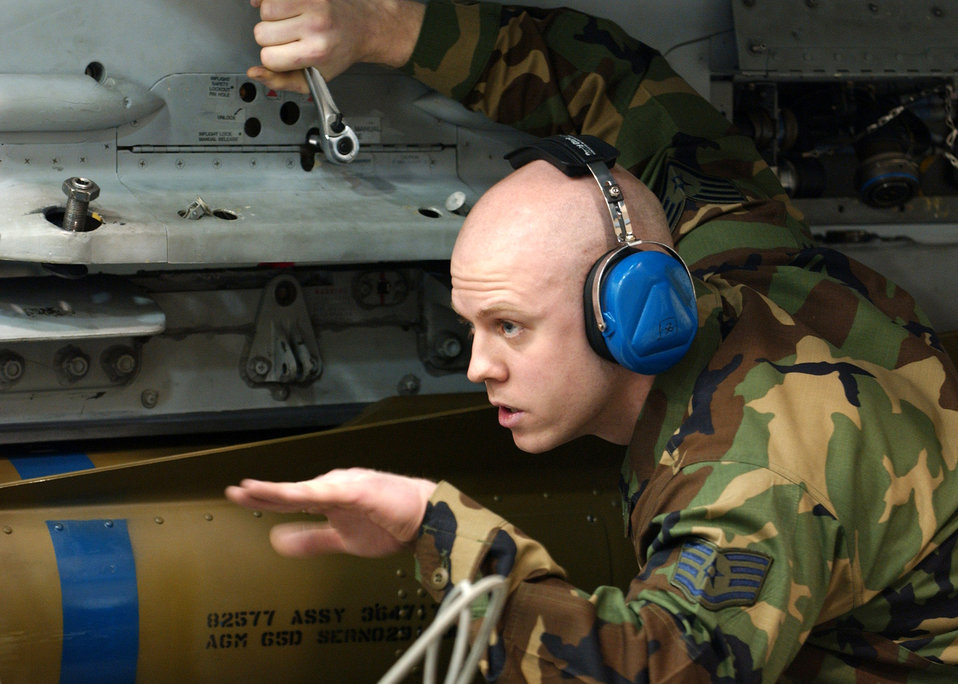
Competing for load crew honors

Staff Sgt. Aaron Slay motions to position an air-to-ground missile to be loaded onto an F-16 Fighting Falcon for the Weapons Standardization Load Crew of the Year Competition Jan. 11 at Eielson Air Force Base, Alaska. The competition evaluates technical proficiency, safety procedures and overall time. Sergeant Slay is assigned to the 18th Aircraft Maintenance Unit. The 18th AMU's overall time was 56 minutes and 37 seconds.